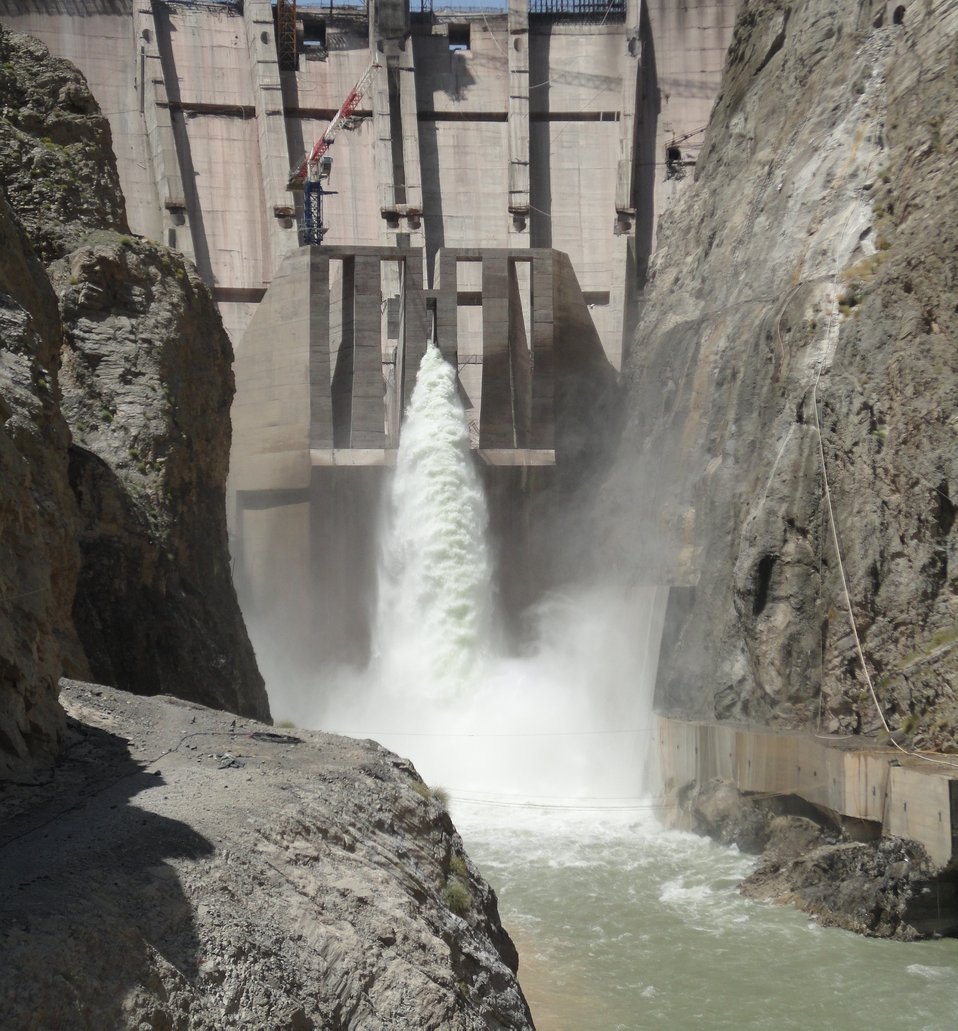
gomal zam (2)